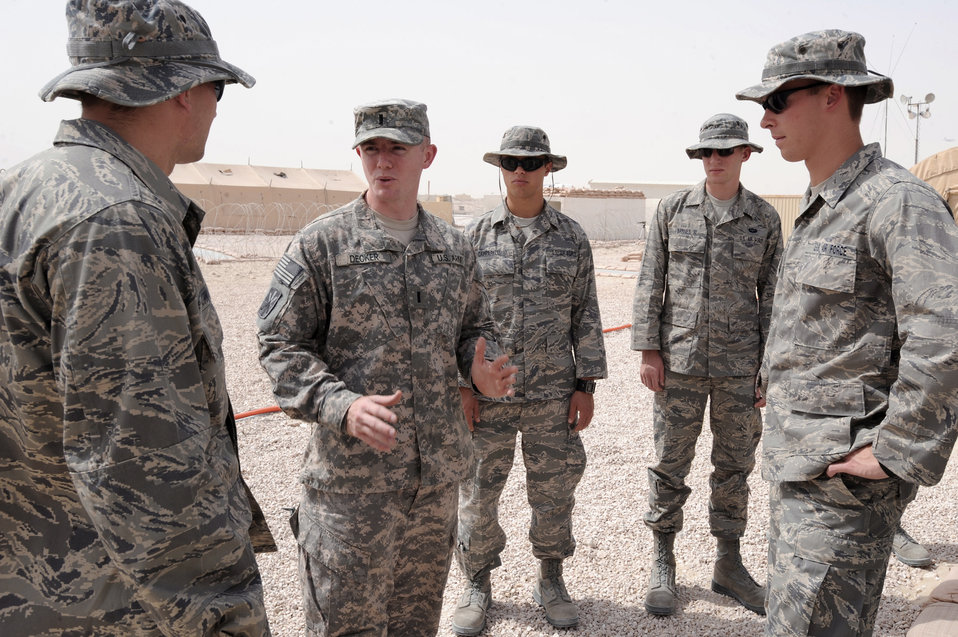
Cadets experience deployment tempo

Army 1st Lt. Christian Decker briefs U.S. Air Force Academy cadets on the Army mission June 24 at an undisclosed location in Southwest Asia. The cadets are part a program called Operation Air Force, which gives them exposure to the operational side of the Air Force and deployed locations before being commissioned.